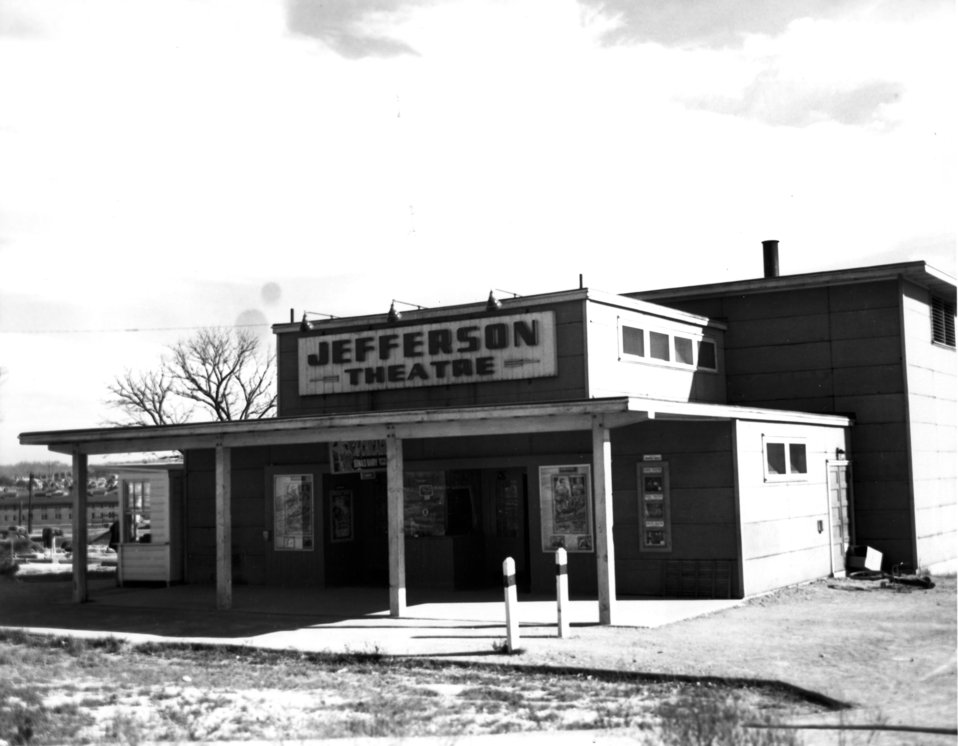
Business activity at Oak Ridge